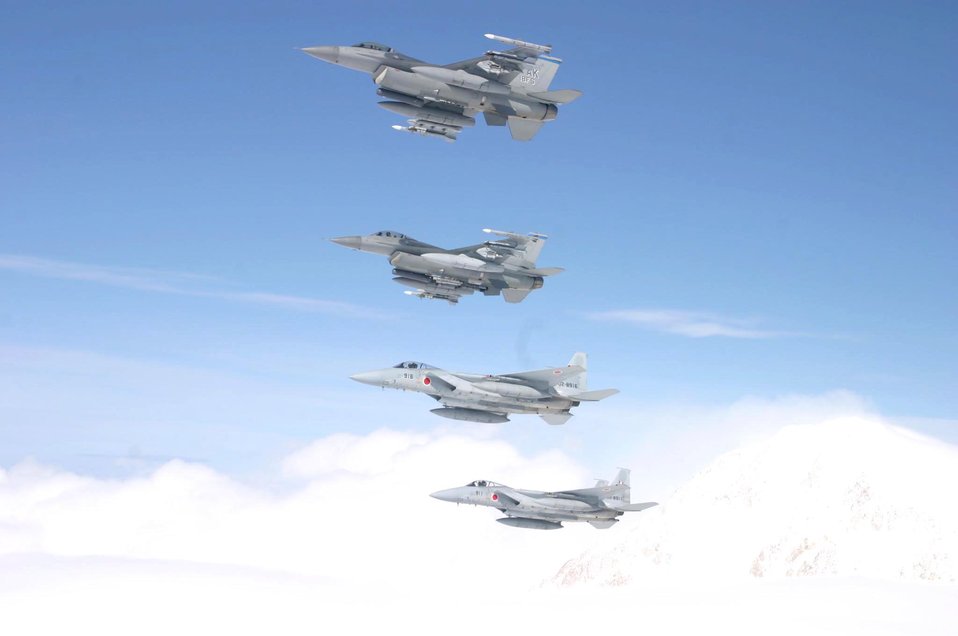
Cooperative flight

OVER ALASKA -- F-16 Fighting Falcons from the 18th Fighter Squadron at Eielson Air Force Base, Alaska, and Japanese F-15s from Chitose Air Base, Japan, fly in formation during Cooperative Cope Thunder on June 10. This Pacific Air Forces-sponsored air combat training exercise takes place June 9 to 24 at Eielson and Elmendorf Air Force Bases in Alaska. Participants include people and aircraft from the United States, Japan, Germany, Singapore, Australia, Sri Lanka, Mongolia, Thailand, Bangladesh, South Korea and the United Kingdom.